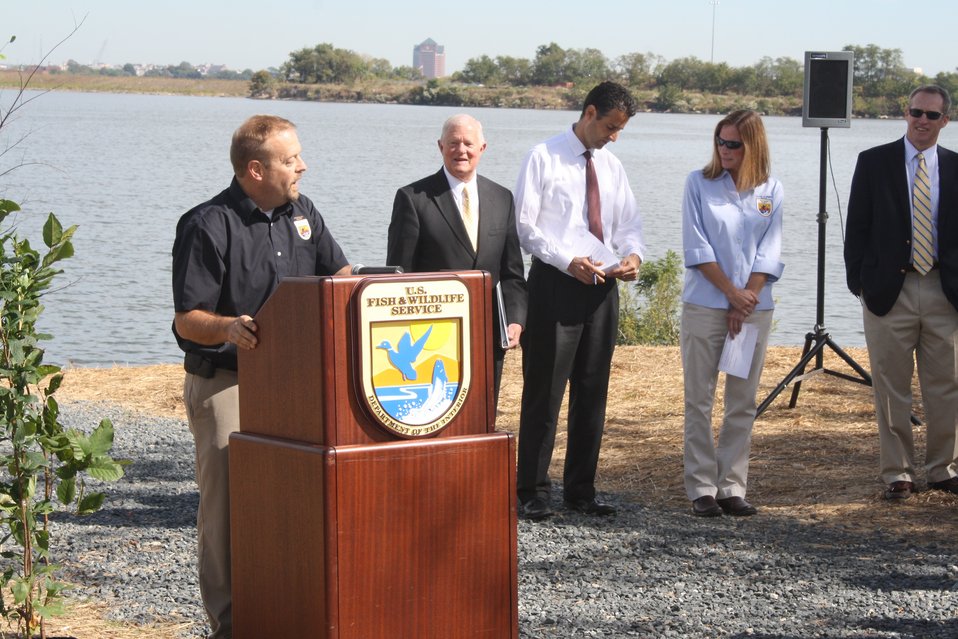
Masonville designation

Scott Kahan, Northeast Regional Chief of the National Wildlife Refuge System discusses the importance of urban refuges at the designation ceremony of Masonville Cove to become the nations's first urban wildlife refuge partnership.